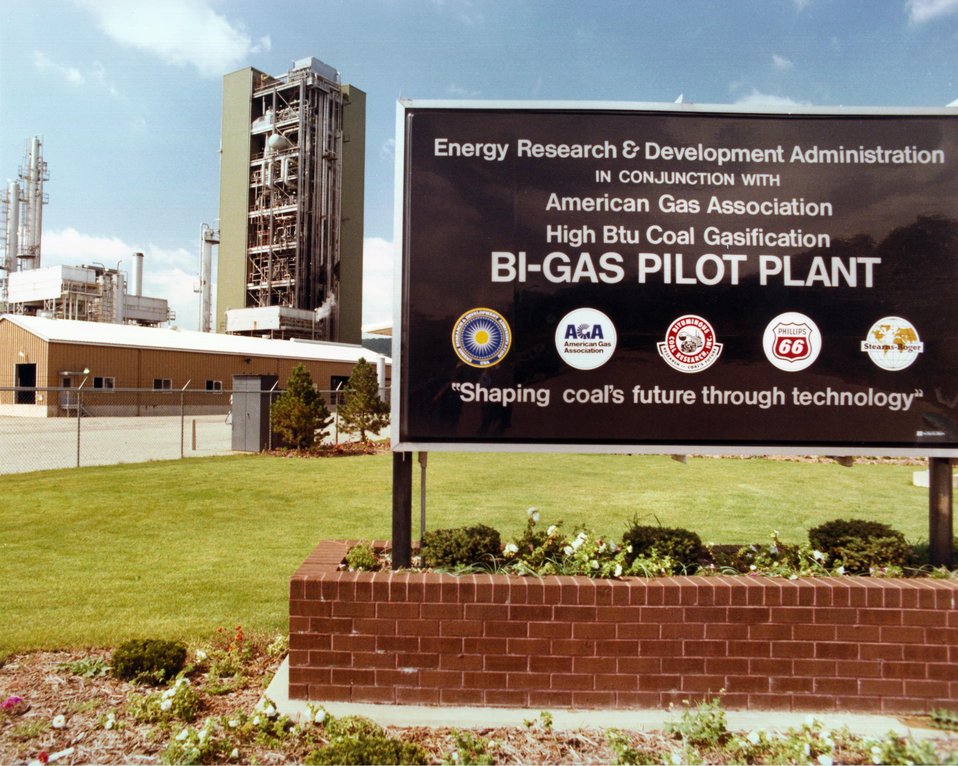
ENTRANCE TO THE BIGAS PILOT PLANT.

THE BIGAS PILOT PLANT HAS A TWO-STAGE, ENTRAINED-BED GAS- IFIER. IN THIS GASIFIER, PULVERIZED COAL IS CONVERTED TO METHANE-RICH GAS BY REACTING THE COAL WITH STEAM AND OXYGEN UNDER HIGH PRESSURE. THE METHANE-RICH GAS IS PROCESSED TO REMOVE THE HYDROGEN SULFIDE AND CARBON DIOXIDE WHICH LEAVES THE HIGH BTU GAS. THE BIGAS REACTOR CAN HANDLE ALL TYPES OF COAL. DUE TO THE HIGH OPERATING TEMPERATURE OF OVER 2500 DEGREES F., THERE IS NO TAR IN THE PRODUCT GAS, THUS SIMPLIFYING THE GAS CLEANUP STEP. HIGH METHANE YIELDS ARE ACHIEVED WITHOUT METHANATION, AND COALS CAN BE GASIFIED WITHOUT PRIOR TREATMENT BECAUSE THE PROCESS USES AN ENTRAINED-BED RATHER THAN A FIXED-BED OR FLUIDIZED-BED SYSTEM.